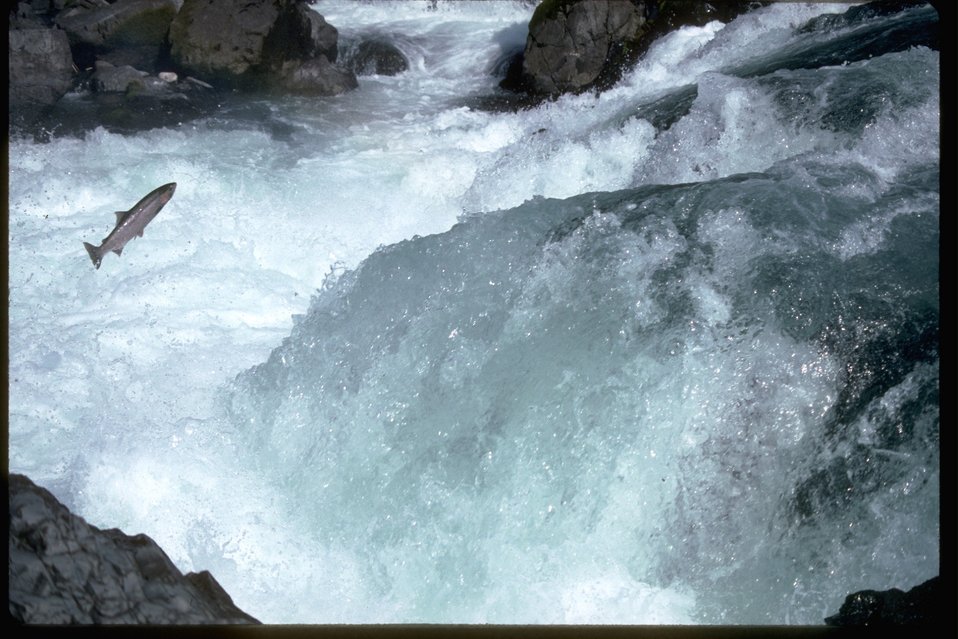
Salmon or Steelhead jumping up falls.